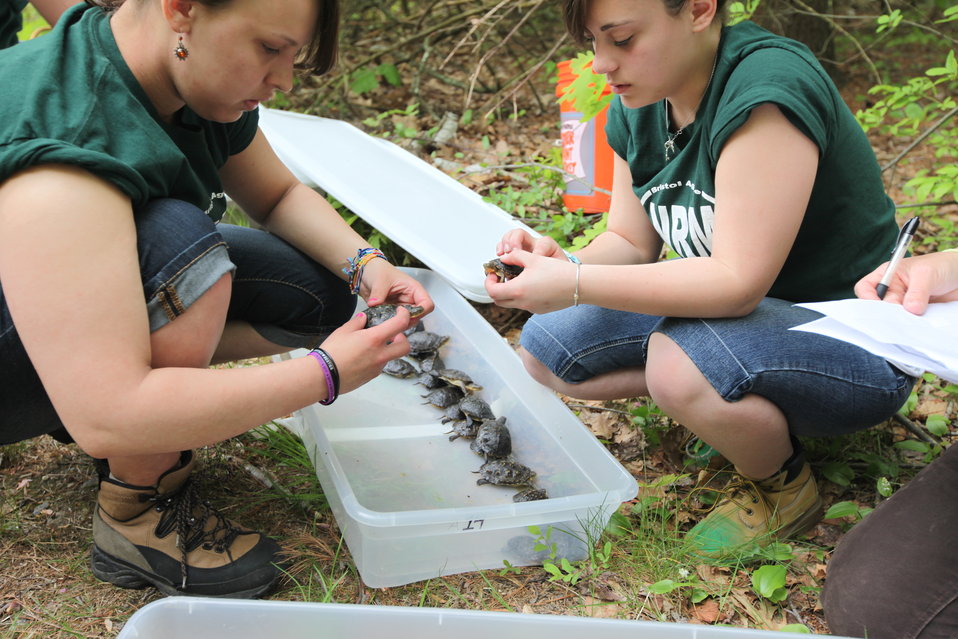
Blanding's turtle release May 2011

Bristol County Agricultural School sophomores partnered with species experts to raise Blanding's turtles and released them in late spring into wetland habitat.